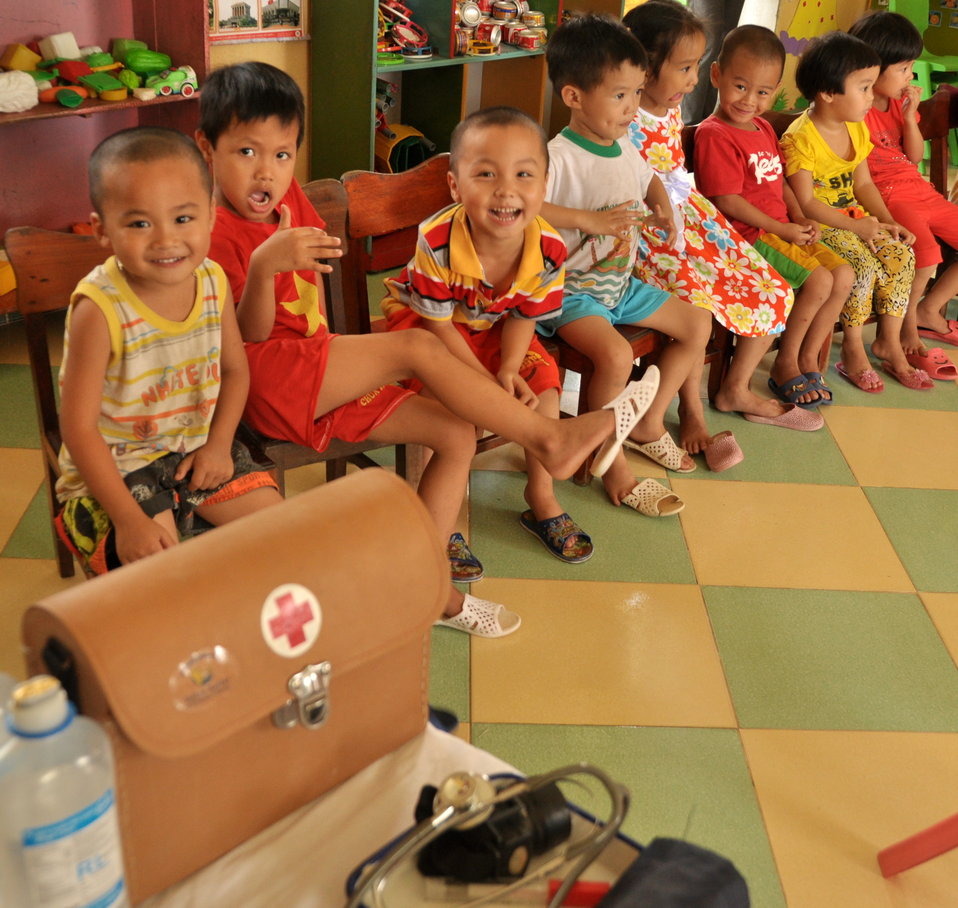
USAID Delivers Deworming Medication to Kindergartners in Nam Dinh Province

Children of Vietnam's Nam Dinh Province receive deworming medicine in a program supported by USAID and World Vision Australia.
June 1, 2013